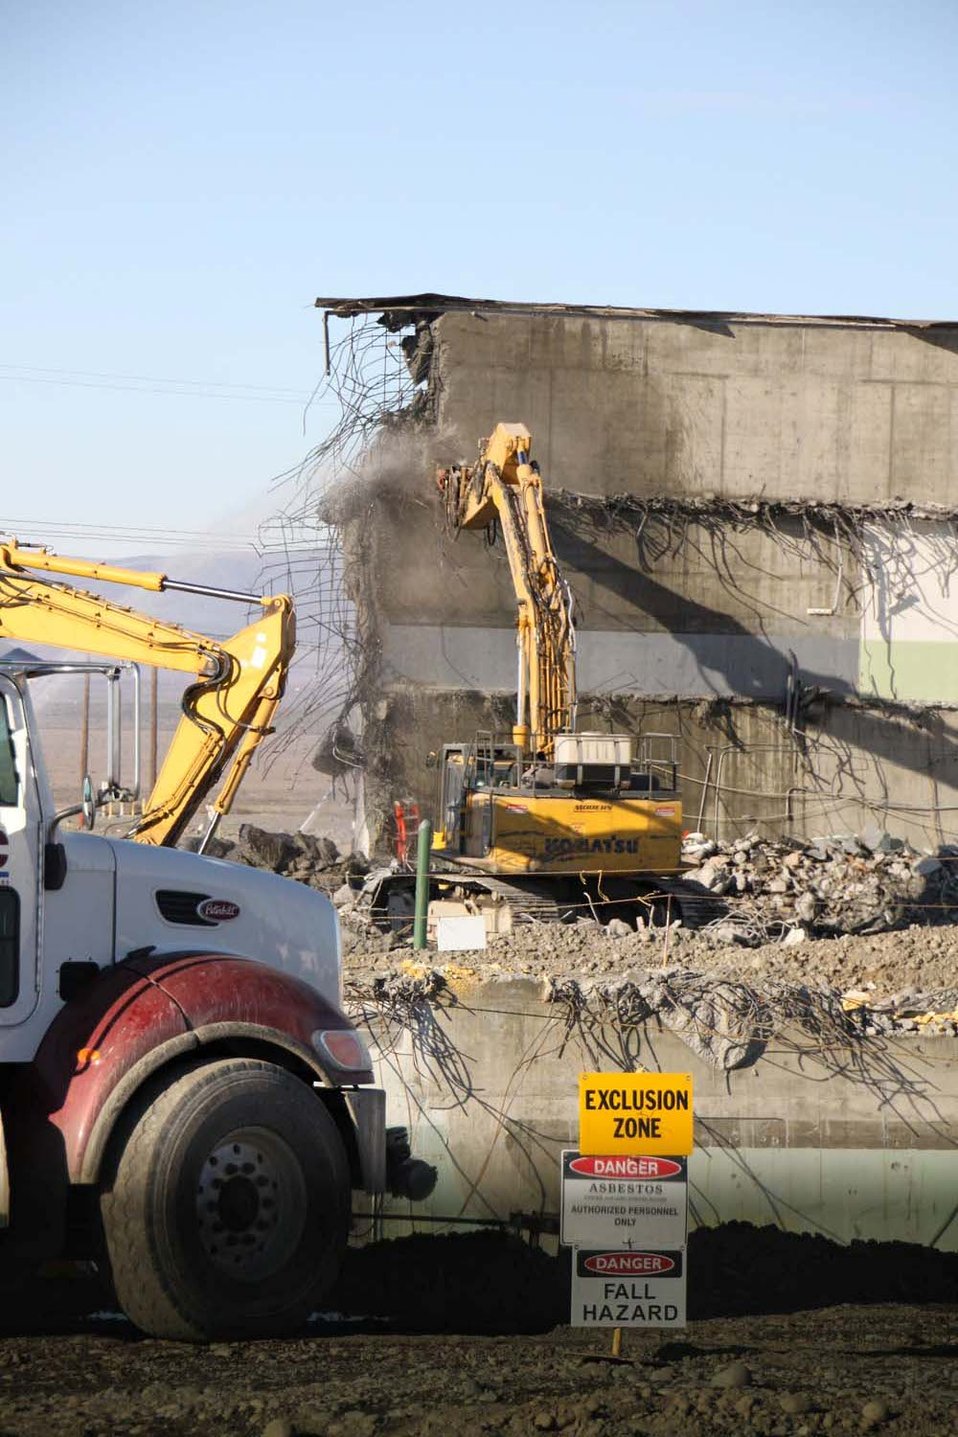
105KE DandD

Recovery Act-funded work at the Hanford site.